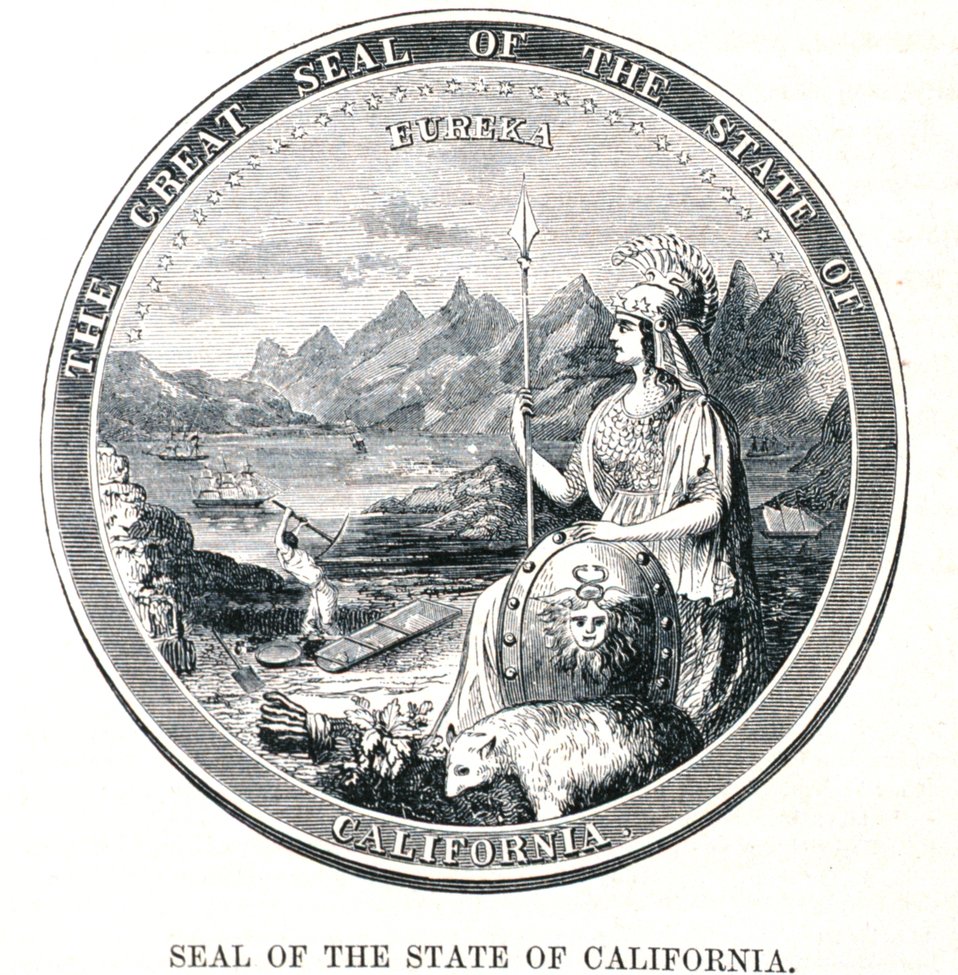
Seal of the State of California. In: 'The Annals of San Francisco'. Frank Soule, John Gihon, and James Nesbit. 1855. Page 805. D. Appleton & Company, New York. F869.S3.S7 1855.